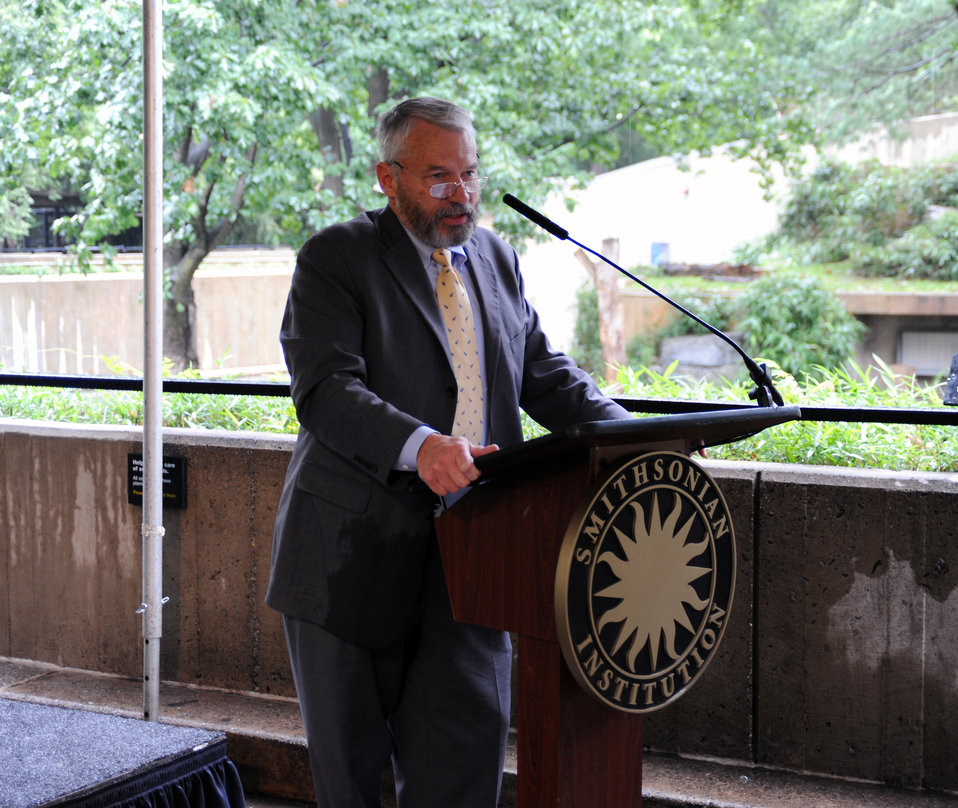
Save Vanishing Species Stamp First Day of Issue